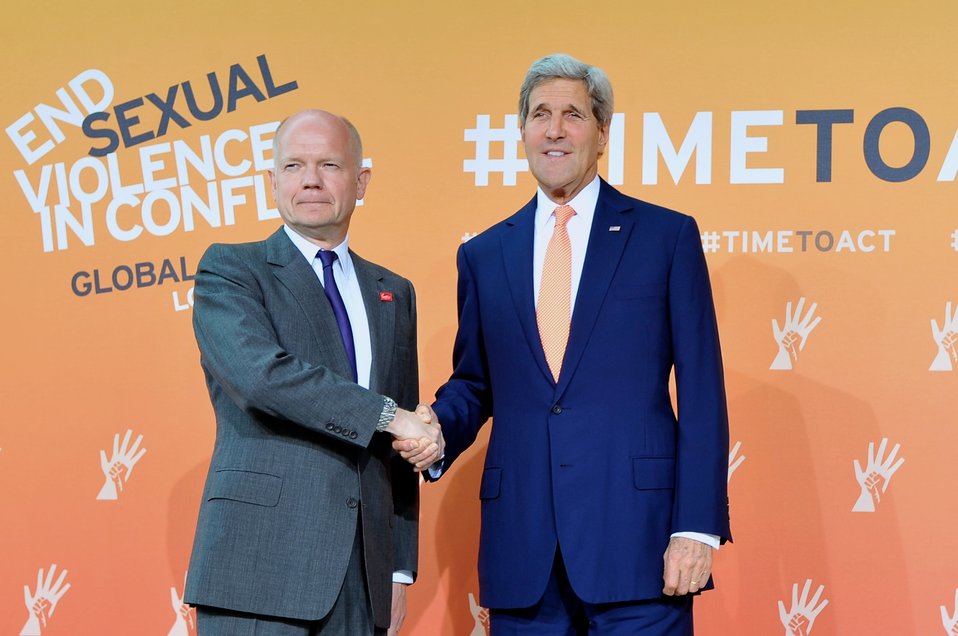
British Foreign Secretary Hague, Secretary Kerry Pose for Photographers at Global Summit to End Sexual Violence in Conflict

British Foreign Secretary William Hague and U.S. Secretary of State John Kerry pose for photographers in London as they enter the 2014 Global Summit to End Sexual Violence in Conflict on June 13, 2014.